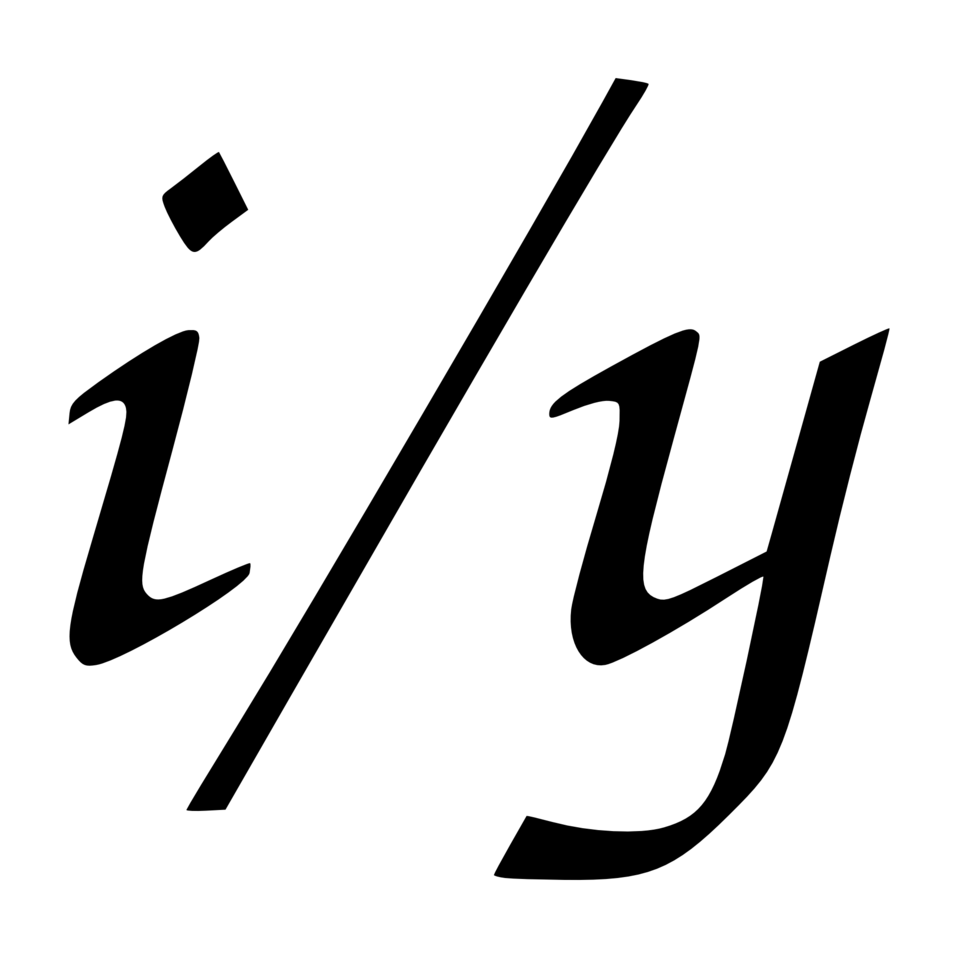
Čeština: Vektorizace obrázku Ikona pravopis.png, jehož autorem je egg.